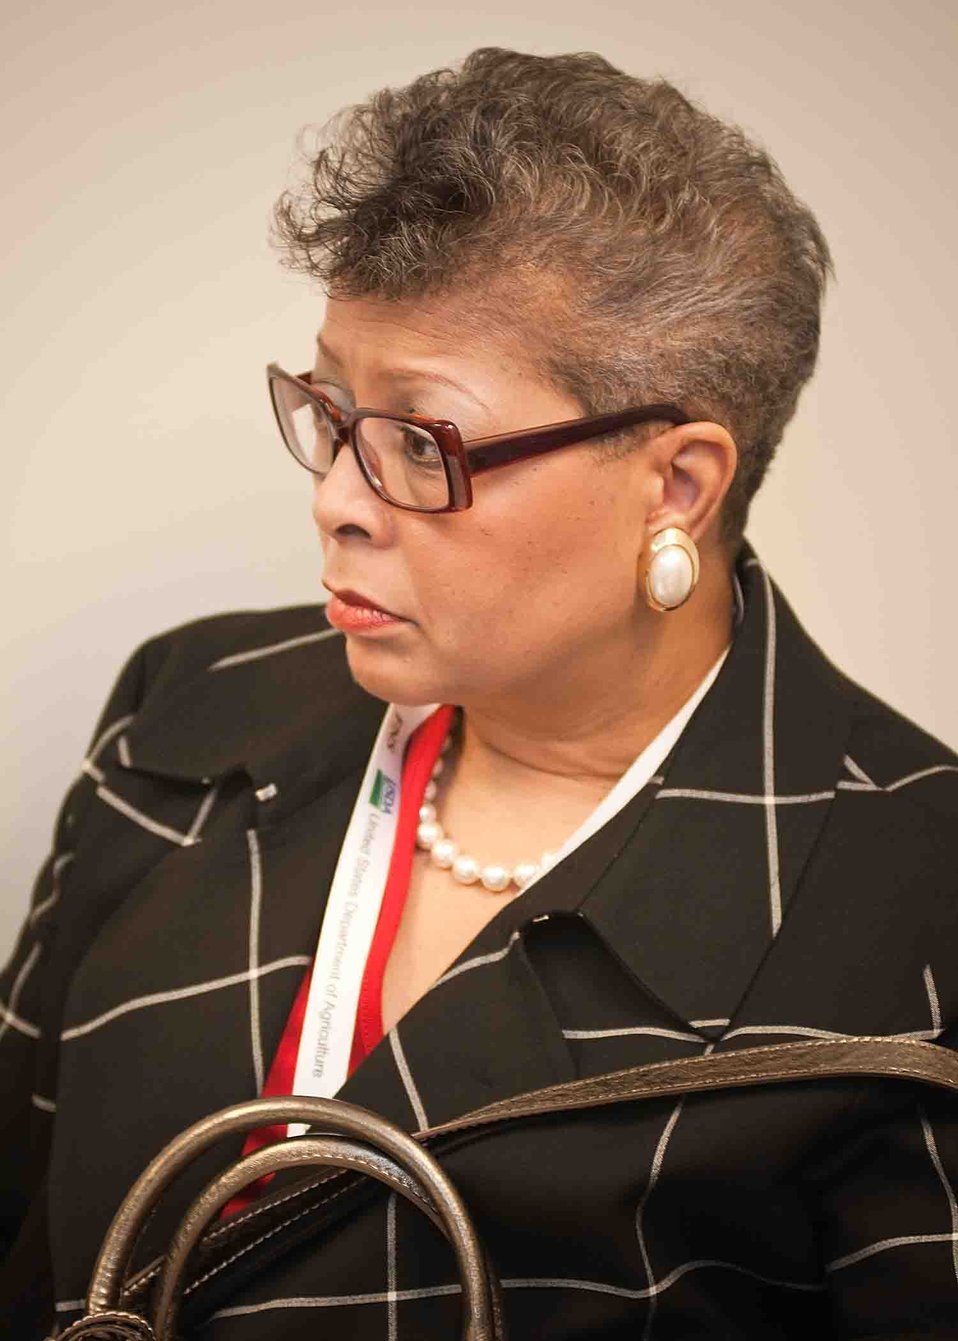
Alternative Dispute Resolution Program Manager for the Food Safety Inspection Service Anita Cunningham listens during an Early Resolution and Conciliation Division open house and training workshop for employees and supervisors at the United States Department of Agriculture (USDA) in Washington, DC, Wednesday, Jun. 15, 2011. The primary goal of the workshop was to strengthen the Alternative Dispute Resolution (ADR) community through outreach, training and partnership with agencies in USDA and make employees aware of ADR.